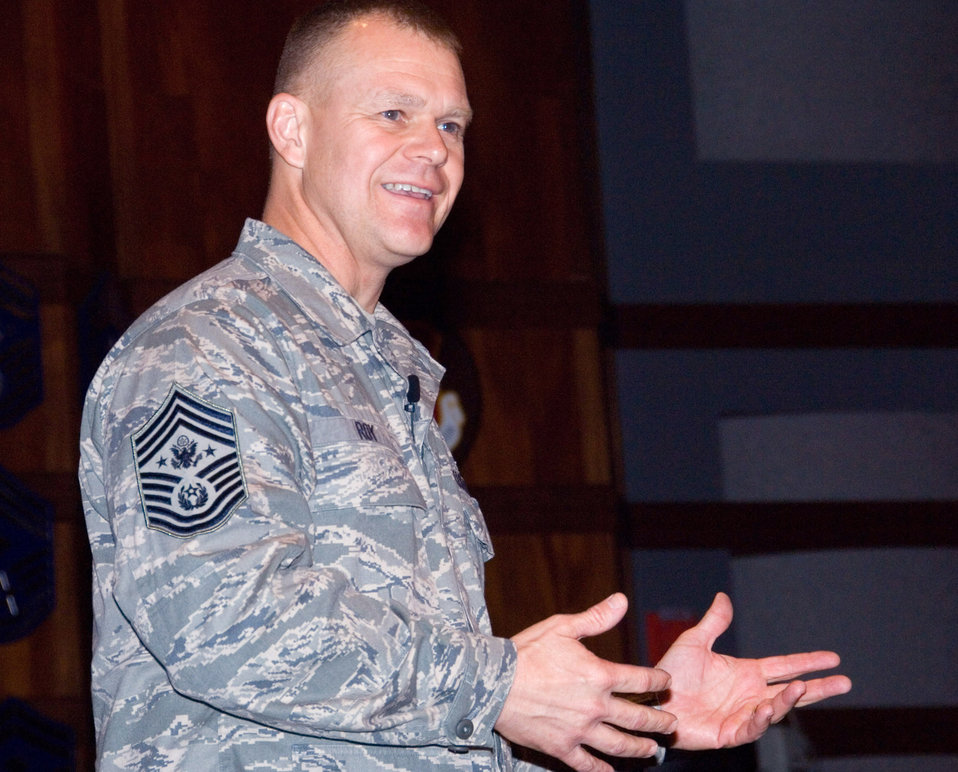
Top enlisted leader visits Maxwell-Gunter

Chief Master Sgt. of the Air Force James A. Roy talks to members of the Senior NCO Academy staff Sept. 25, 2009, at Gunter Annex of Maxwell Air Force Base, Ala.